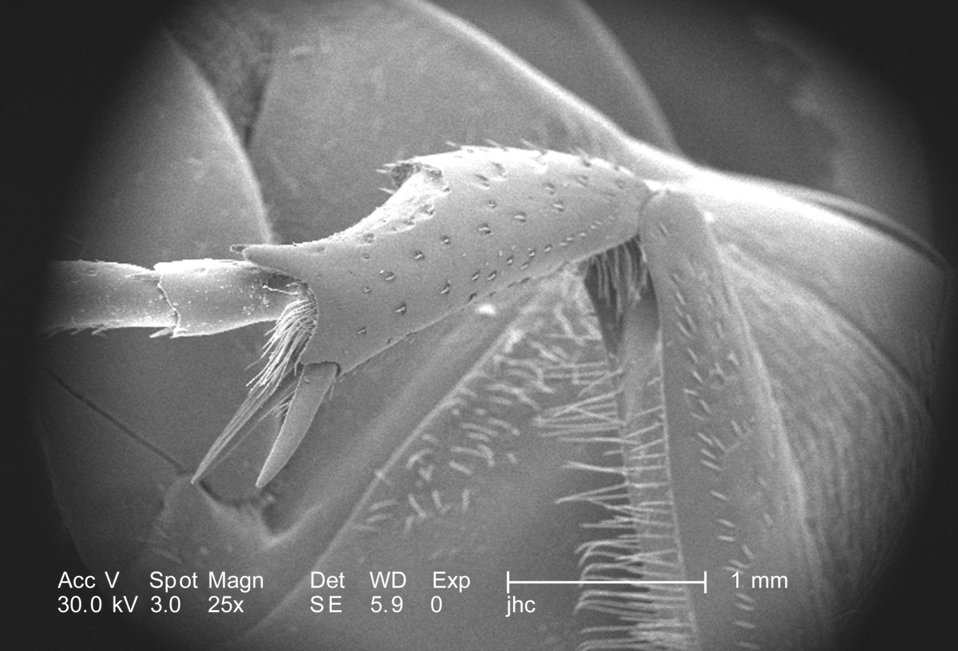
At a low magnification of only 25X, this scanning electron micrograph (SEM) depicted some of the morphologic exoskeletal features located one of the six legs of an adult 'figeater' beetle, Cotinis mutabilis. Sometimes referred to as a 'junebug, this insect is a member of the taxonomic family, Scarabaeidae, or dung beetles. In this particular image, structures associated with the exoskeletal nature of the insect's leg, and its jointed construction, from which the organism derives its taxonomic membership to the phylum, Arthropoda, i.e., 'Arthro' = jointed, and 'poda' = legs, are quite evident. This beetle was found in the Decatur, Georgia suburbs.